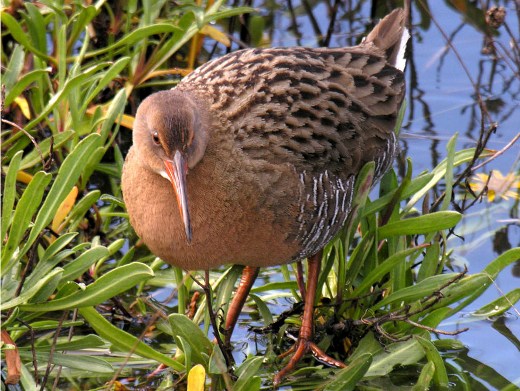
U.S. Department of Agriculture (USDA) Animal Plant Health Inspection Service (APHIS) Wildlife Services (WS) works with the U.S. Fish and Wildlife Service to assist with the recovery of endangered California clapper rails. These shy birds are only found in the San Francisco and San Pablo Bay area. Most clapper rail habitat has been destroyed or is surrounded by business parks and subdivisions. Predation damage management, recent land purchases, and the restoration of salt ponds help to protect and maintain critical habitat for this endangered species.